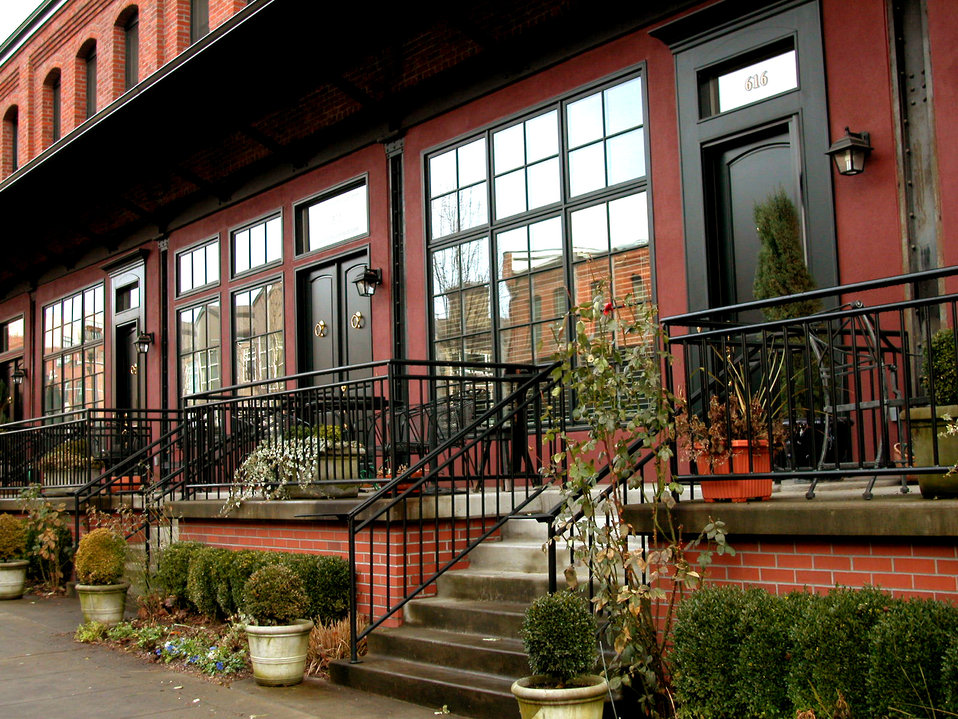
The partially raised sidewalk in this 2004 image, revealed how this configuration allowed for a grade separation, while providing the opportunity for an accessible route from either end, to the at-grade, sheltered entrances leading to each residential unit. Taking into account those individuals who are mobility-challenged during the design process, produced a product that provided a greater degree of accessibility for all who might visit this site. See PHIL# 9105 for a view of the building fa�e from a greater distance, highlighting the architectural features, which facilitate accessibility.